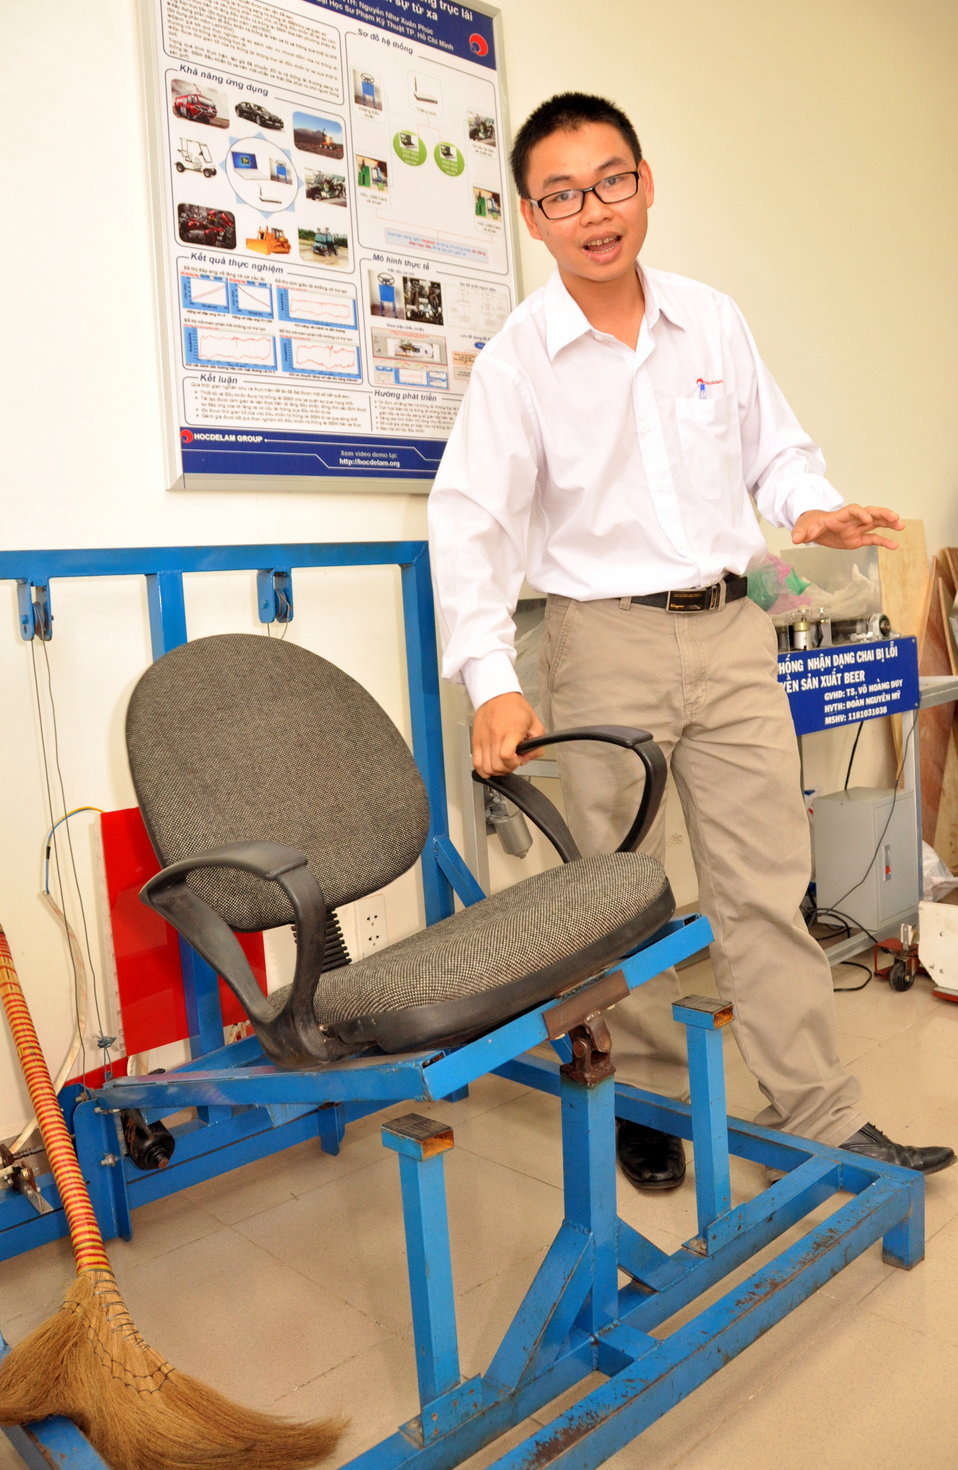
Ho Chi Minh City University of Technical Education, HEEAP Partner

Faculty Member Nguyen Ba Hai
January 11, 2013